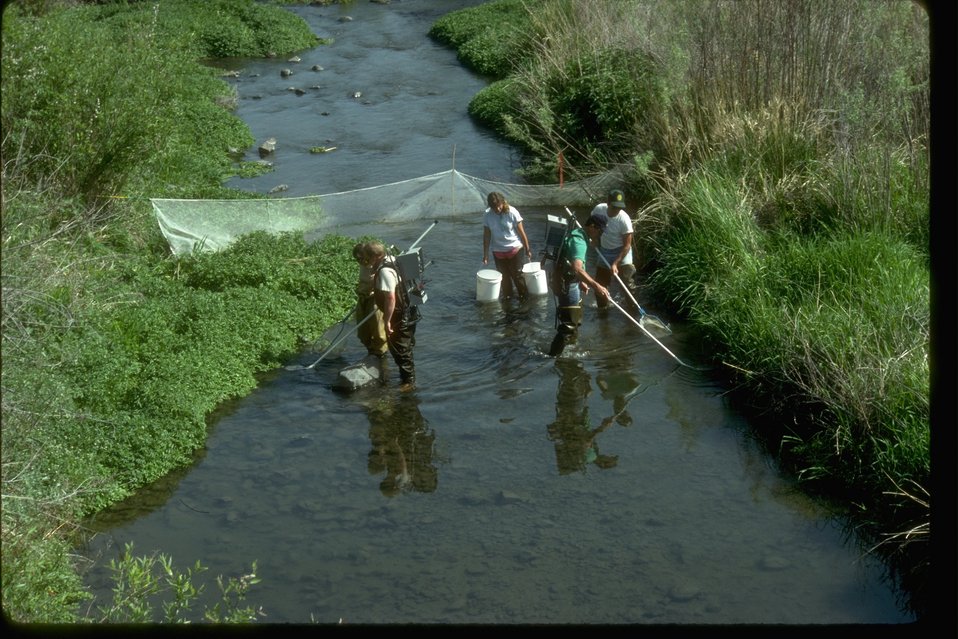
Biologists perform fish inventory in Douglas Creek, Washington.